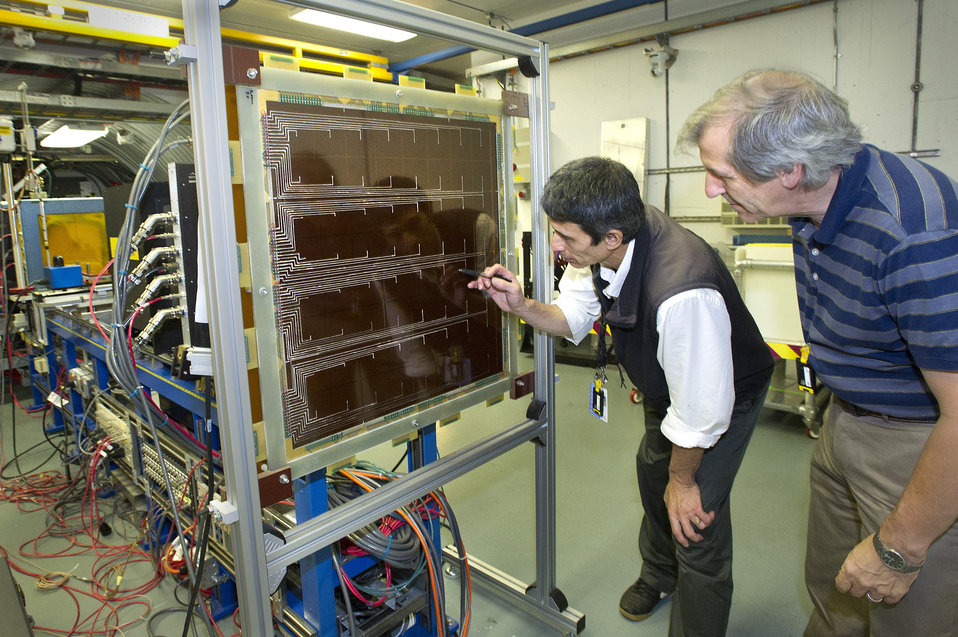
NASA is working with researchers at BNL to learn about the possible risks to human beings exposed to space radiation.

To study the radiobiological effects using beams that simulate the cosmic rays found in space, the NASA Space Radiation Laboratory was established at BNL.